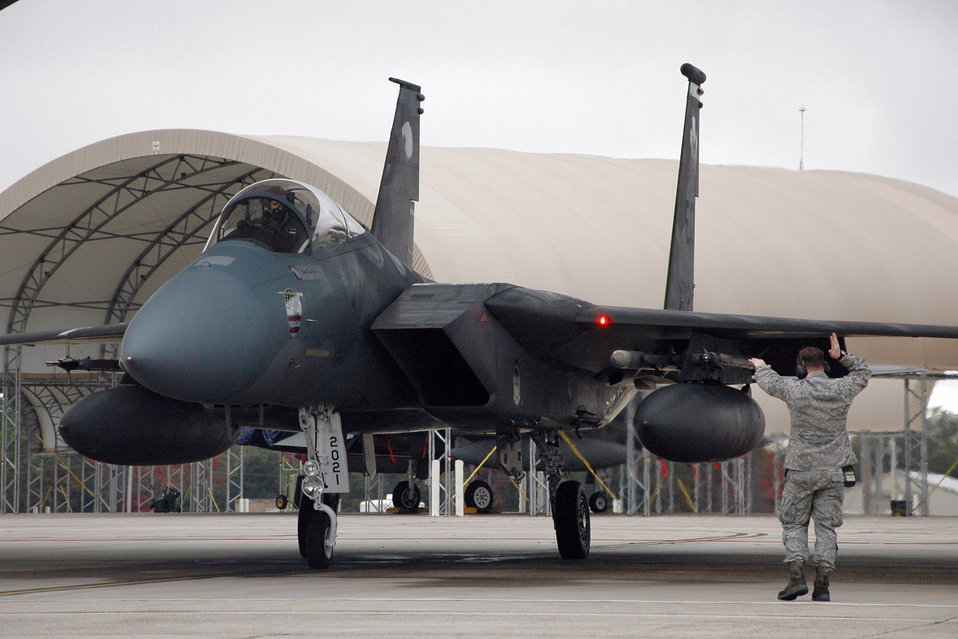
Eglin Airmen test readiness during weeklong exercise

A 58th Aircraft Maintenance Unit crew chief marshals an F-15 Eagle ready to takeoff for a simulated Operation Noble Eagle tasking during a 33rd Fighter Wing exercise Dec. 17 at Eglin Air Force Base, Fla.